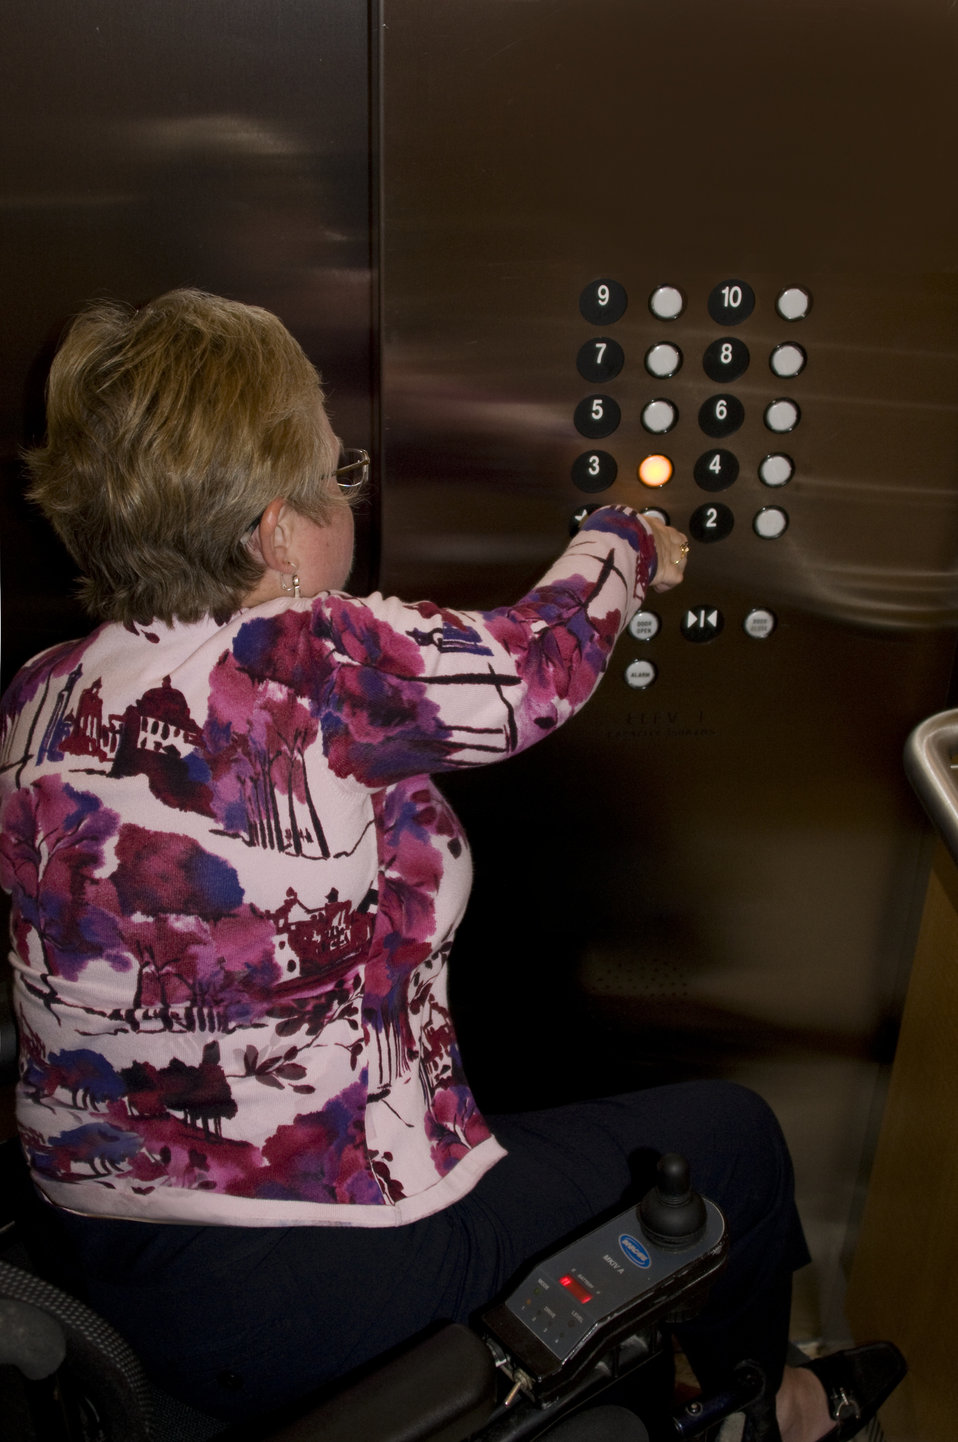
The woman picture here, was seated in her wheelchair, and had boarded an elevator in a highly-accessible building on one of the Centers for Disease Control's (CDC) Atlanta, Georgia campuses. She was in the process of pressing the desired floor where she was to conduct her business. Note the height at which the selection, and emergency buttons were situated, making them universally-accessible for all passengers.